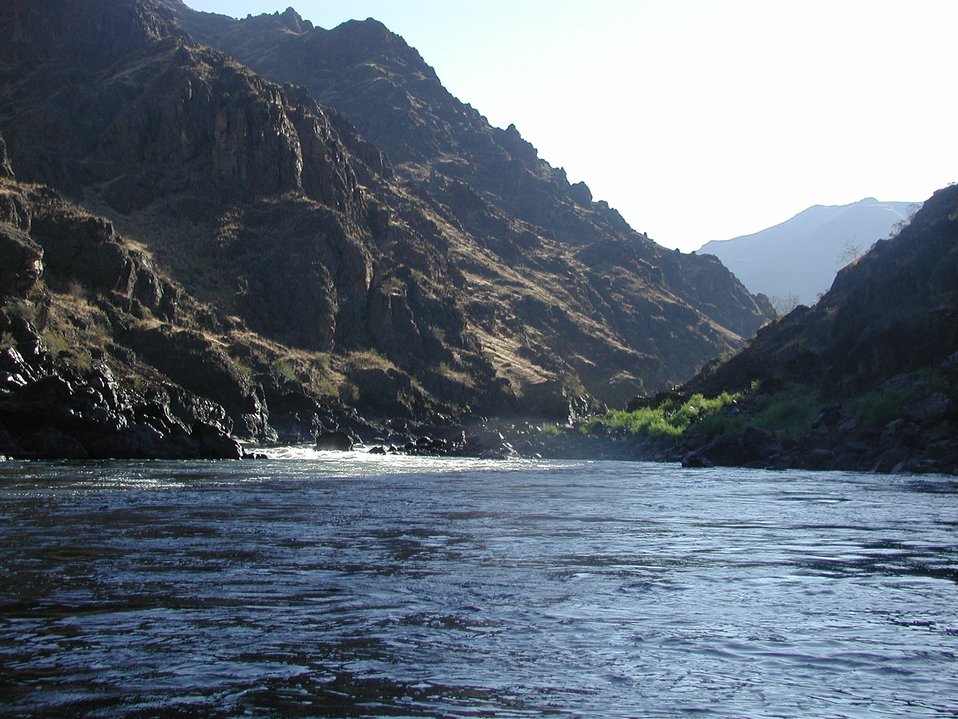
Scenic shot of Lower Salmon River Cottonwood Field Office UCSC Upper Columbia Salmon Clearwater District